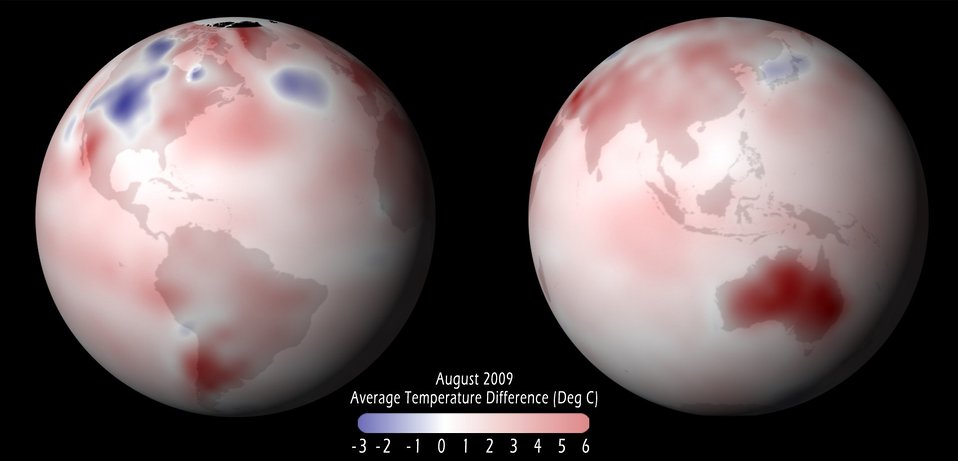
Graphic of global temperature anomaly for August 2009. North America was experiencing a cooler summer while Australia and southern South America were having a very warm winter.